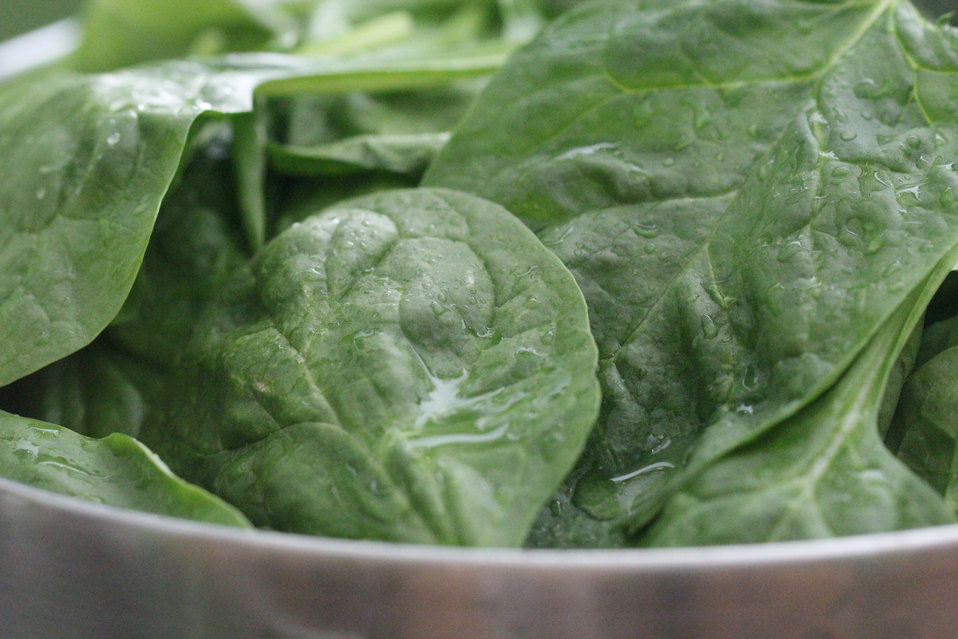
This image depicts a close-up view of a metal colander filled with freshly-washed spinach leaves, which were now ready to be eaten raw in a delicious salad, or cooked into a stir-fry dish.